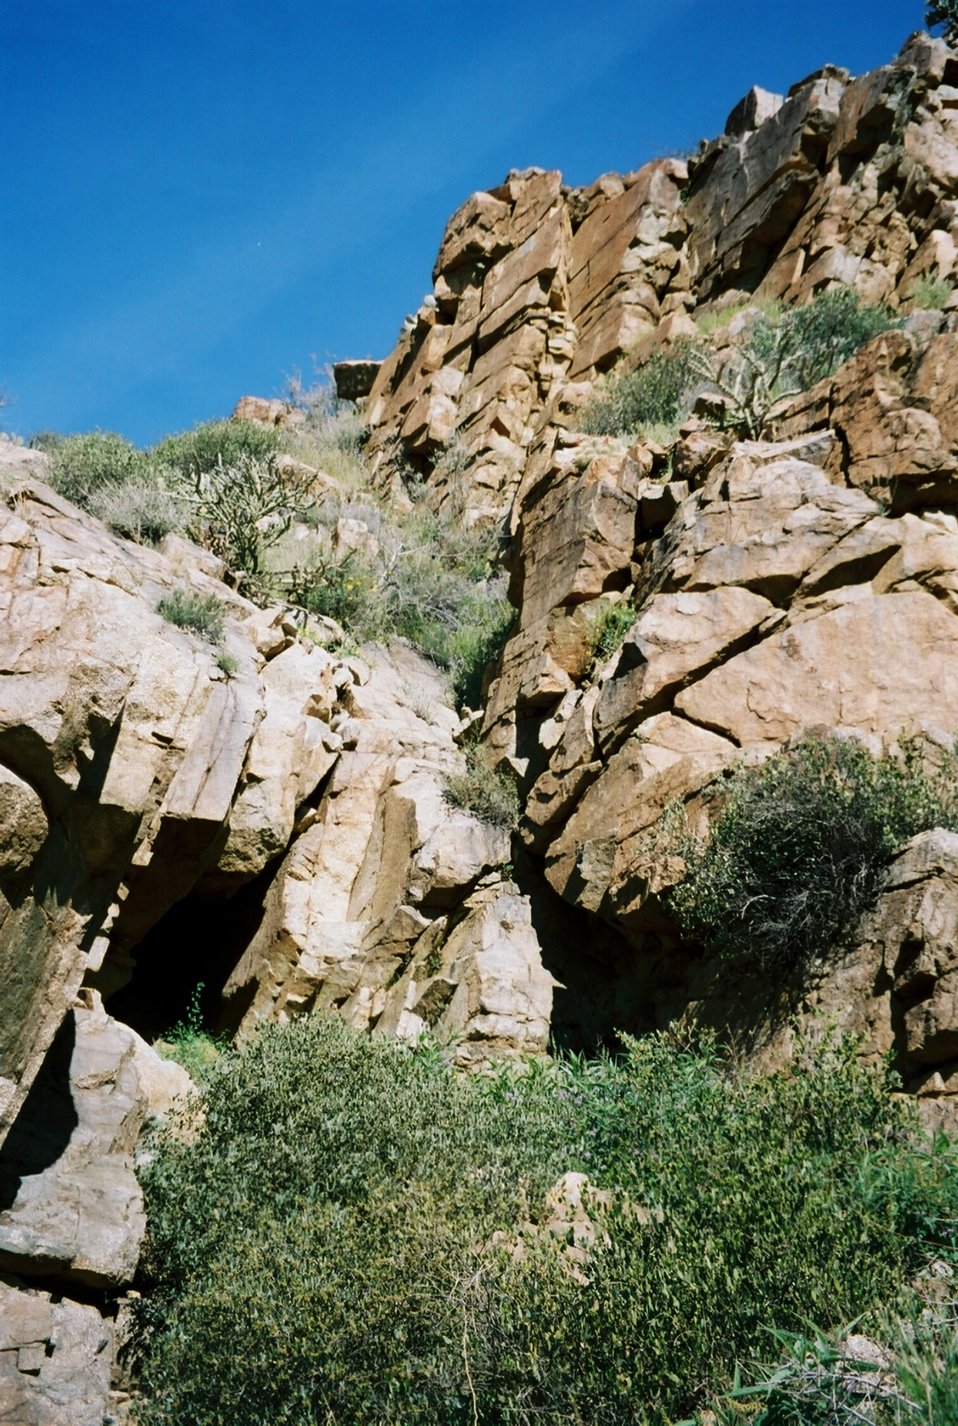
Here is another majestic scene of the Agua Fria National Monument.